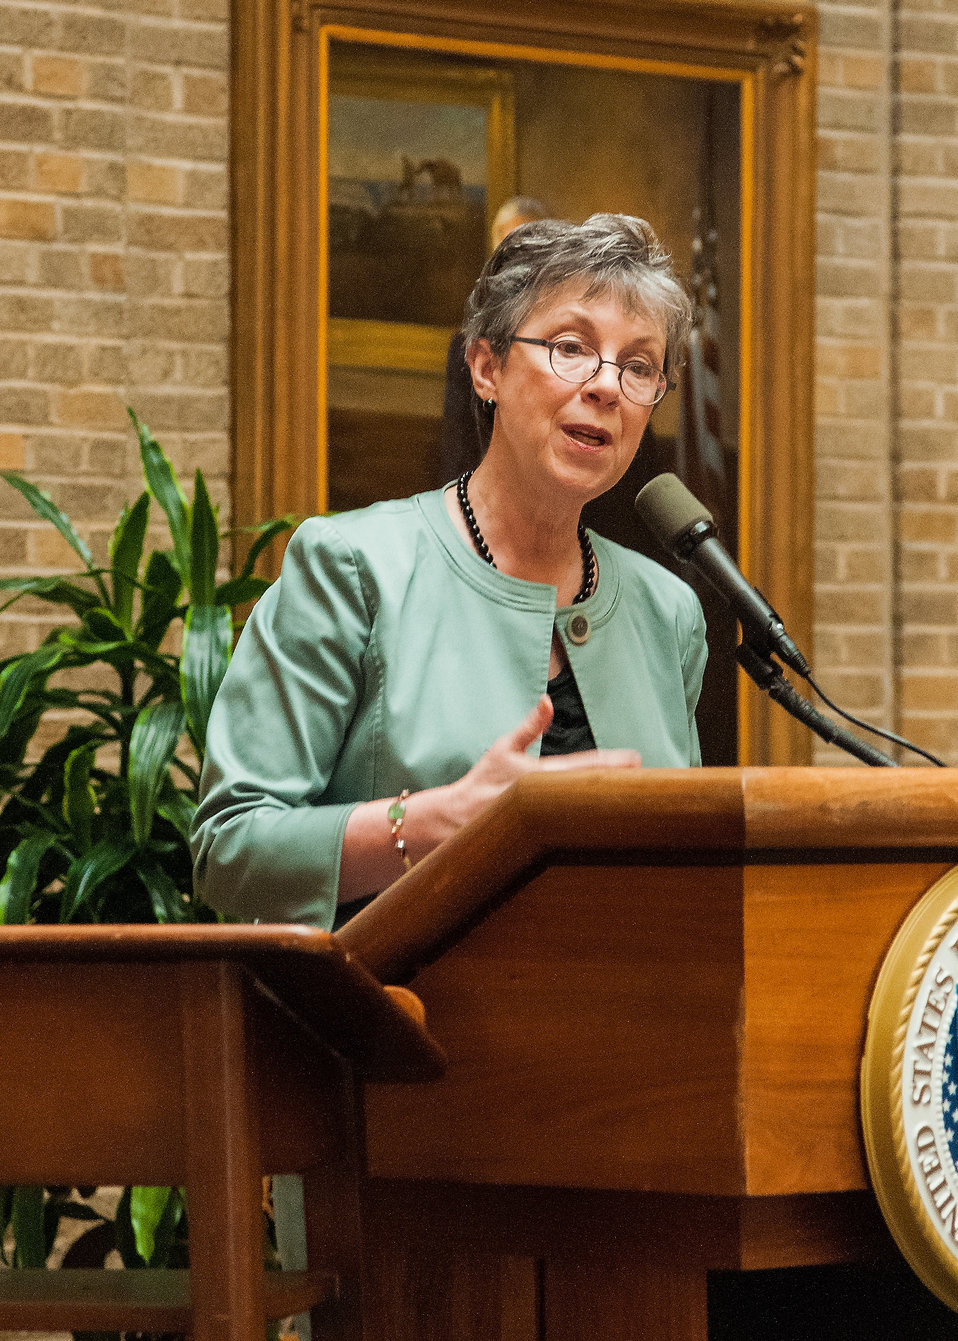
Agriculture Under Secretary for Research, Education and Economics (REE) Dr. Catherine Woteki welcomes participants to the U.S.-Israel Bio-Challenge Symposium at the U.S. Department of Agriculture (USDA) in Washington, D.C. on Thursday, Apr. 18, 2013.